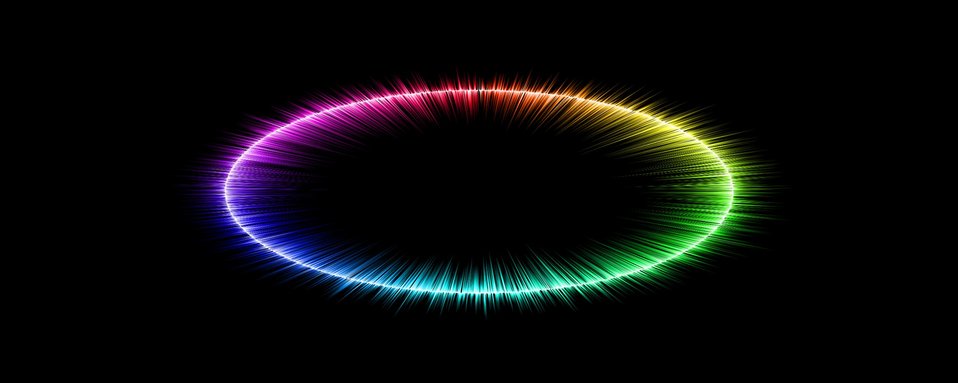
Soundwave circle

A rainbow circle of soundwaves..